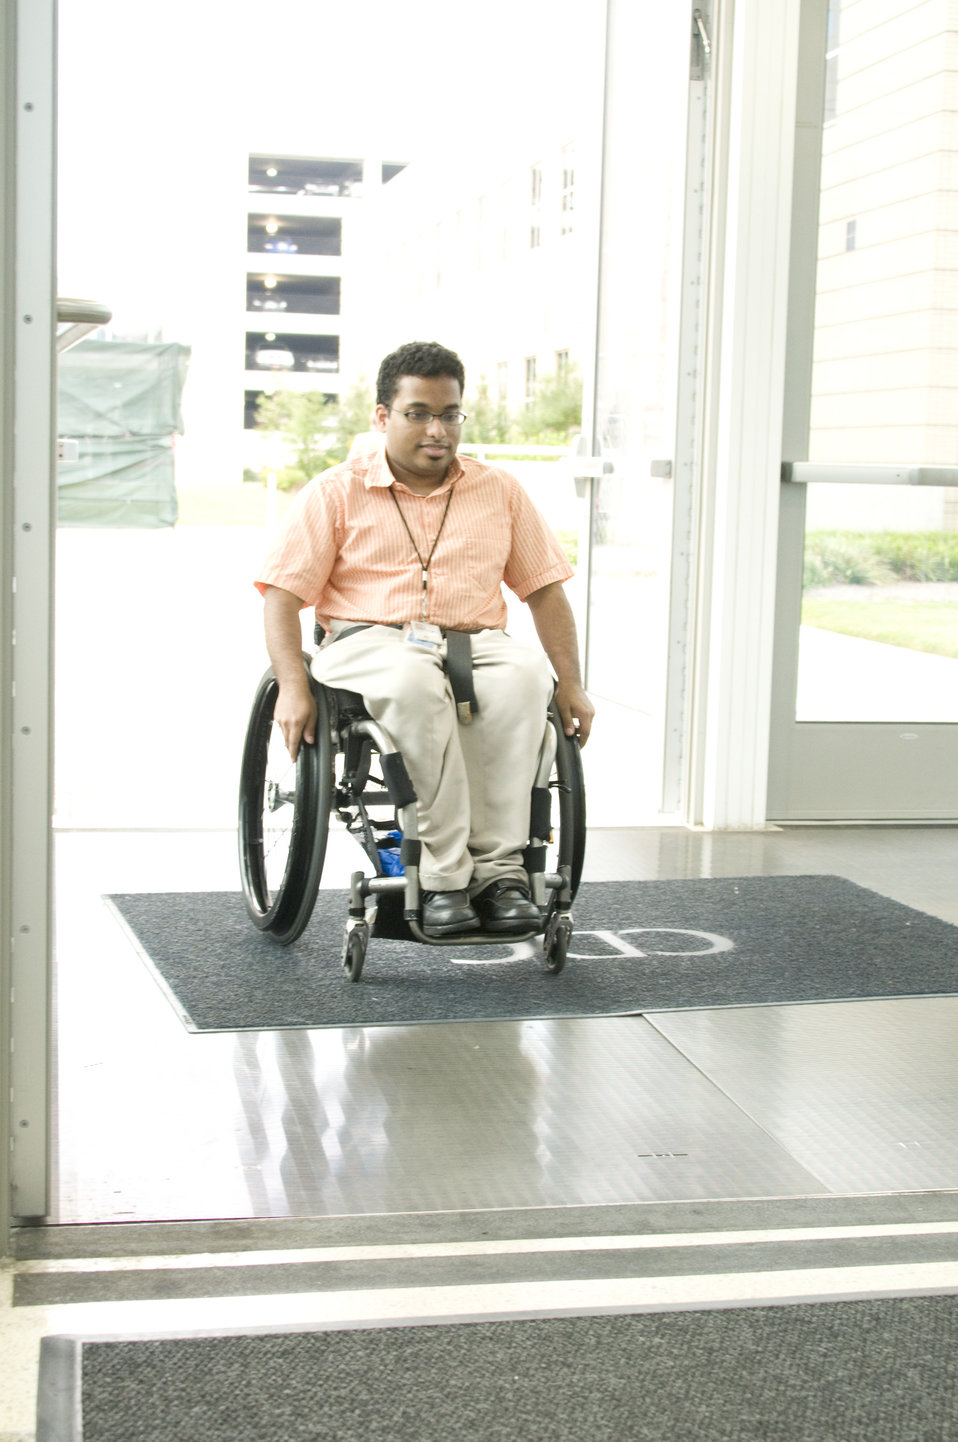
The man depicted here was in the process of entering a building on one of the Centers for Disease Control and Prevention's (CDC) campuses. He was seated in a wheelchair after having triggered the mechanized doors to open by using an easily-accessible push button door switch-pad.